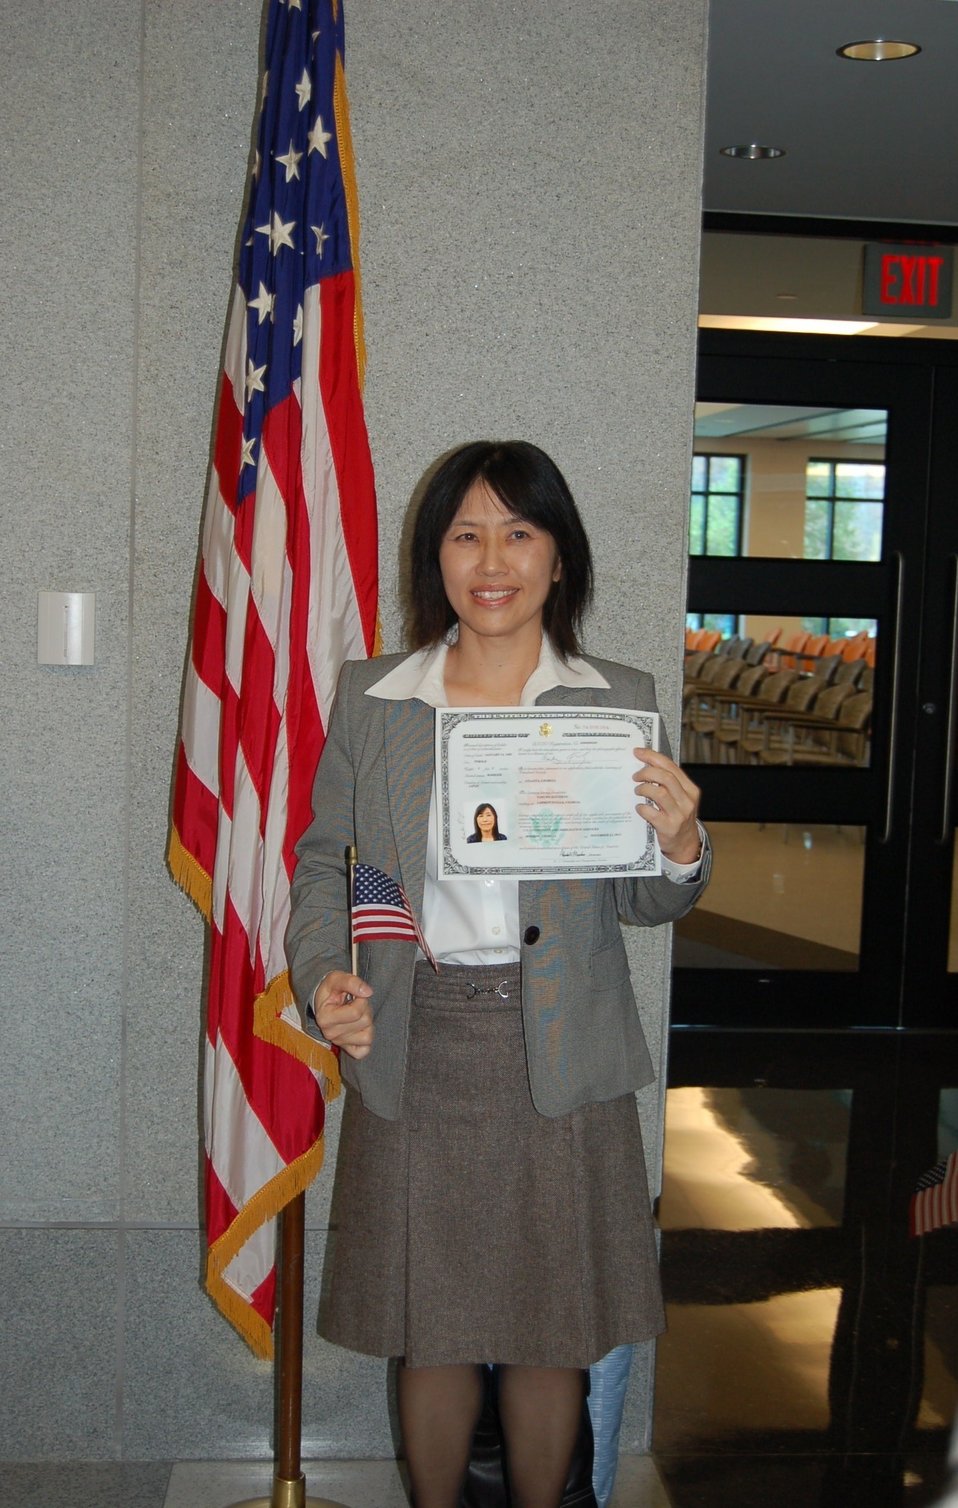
New Citizens